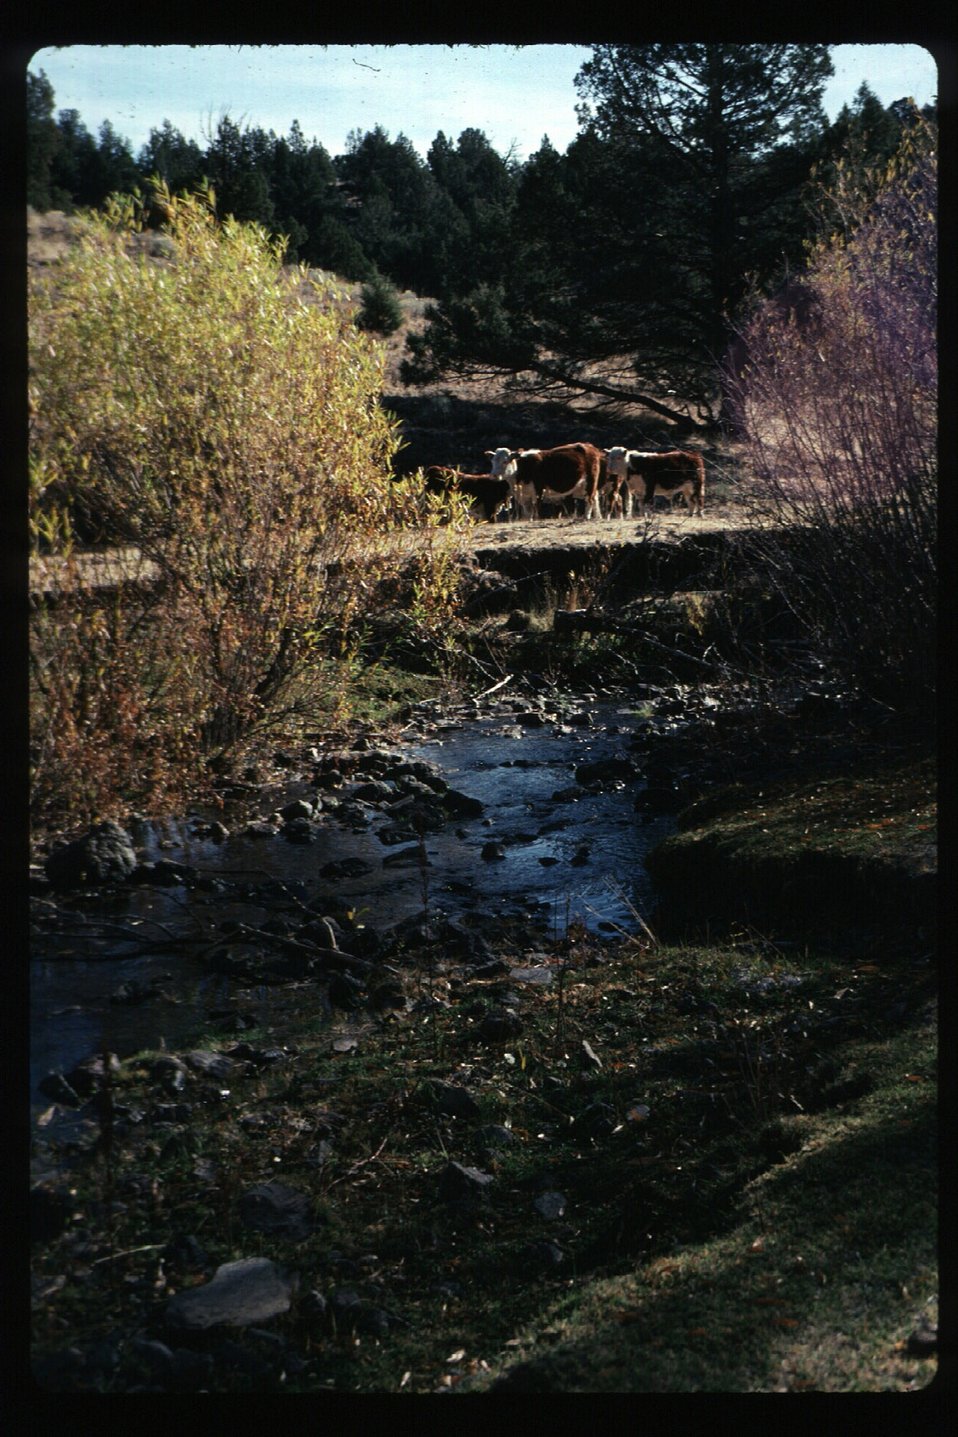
Riparian Management Issues Juniper Creek Cliffs Allotment LSRD Lower Snake River District